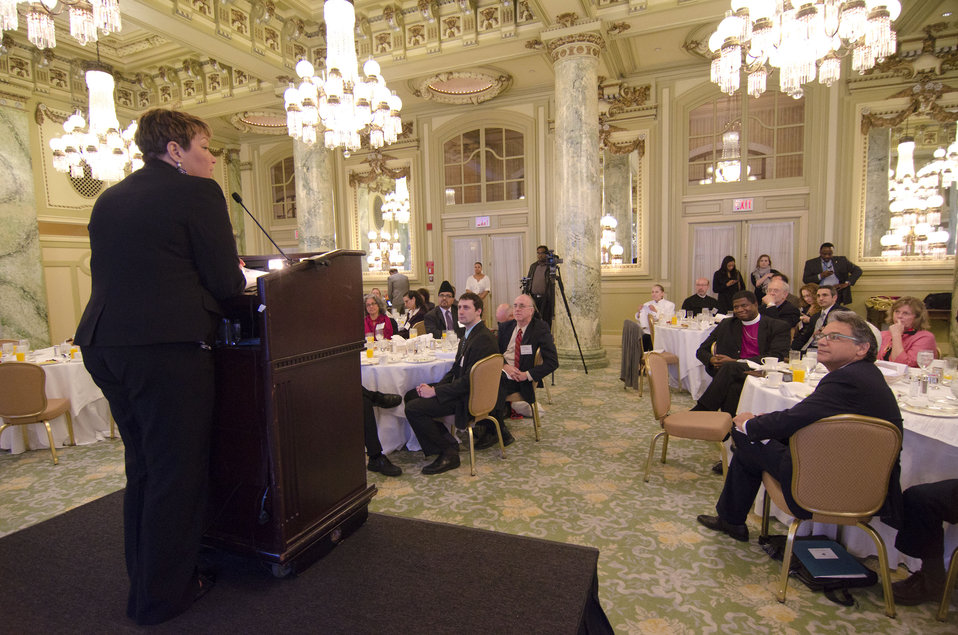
2011-05-05 NRCCCPrayerBreakfast 001

US EPA Administrator Lisa P. Jackson addresses the audience after accepting the Steward of God's Creation Award from the National Religious Coalition on Creation Care.